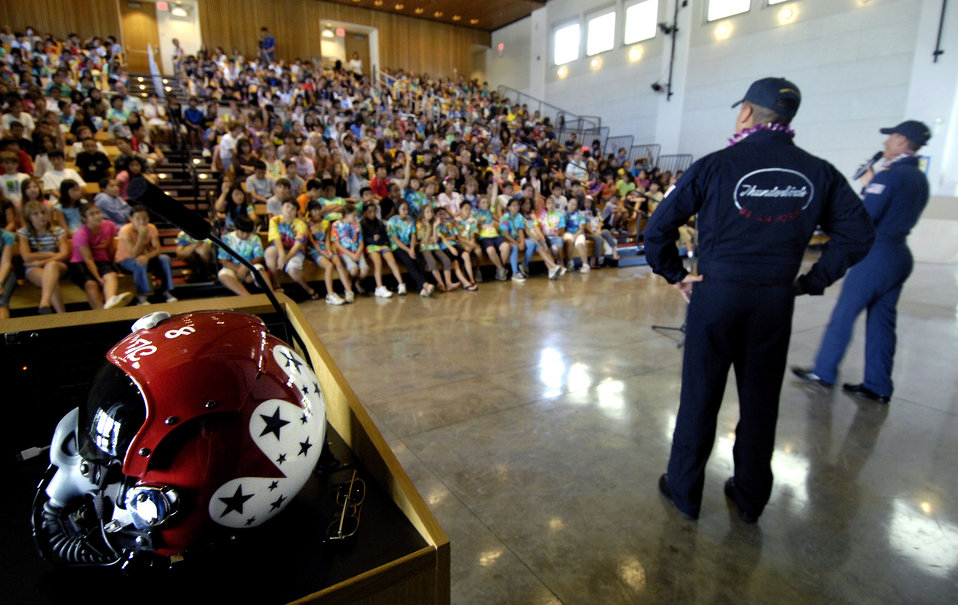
Thunderbirds visit school children during Air Force Week Honolulu

Tech. Sgt. Mario Munguia and Maj. Tad Clark talk about equipment they use as members of the Air Force Deomonstation Team, the Thunderbirds, to middle school children Sept. 14 at the Punahou School in Honolulu. The Thunderbirds made a community appearance at the school in Oahu as part of Air Force Week Honolulu.